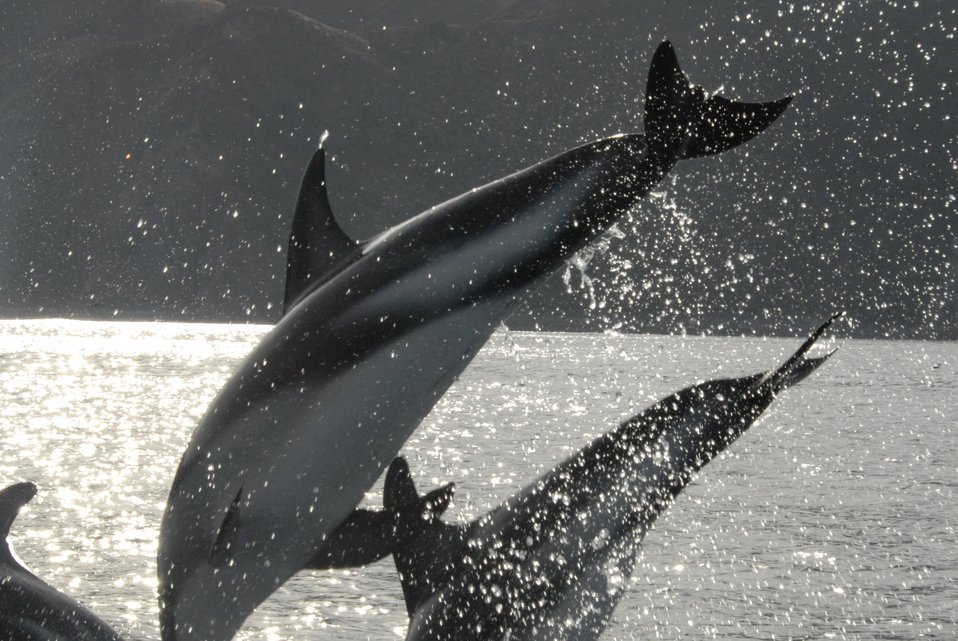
Dusky dolphin (Lagenorhynchus obscurus)